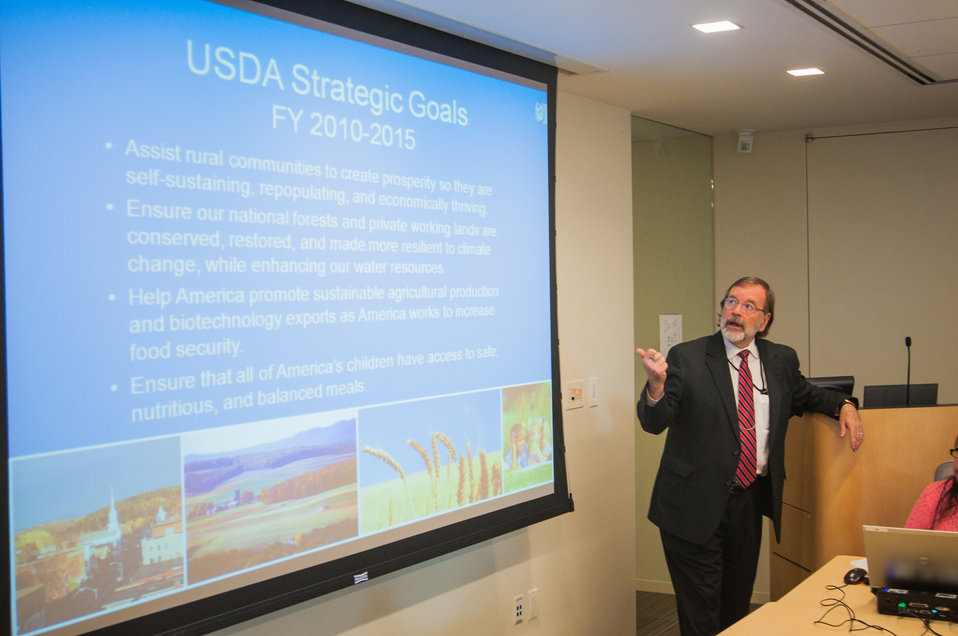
U.S. Department of Agriculture (USDA) Agricultural Research Service (ARS) Beltsville Agricultural Research Center, Agricultural Research Service Director Steven Shafer discusses the history and role of agricultural research at the United States Department of Agriculture at the USDA 2013 Land-Grant Development Tribal Fellows Program held in Washington, D.C. on Monday, Jun. 03, 2013.